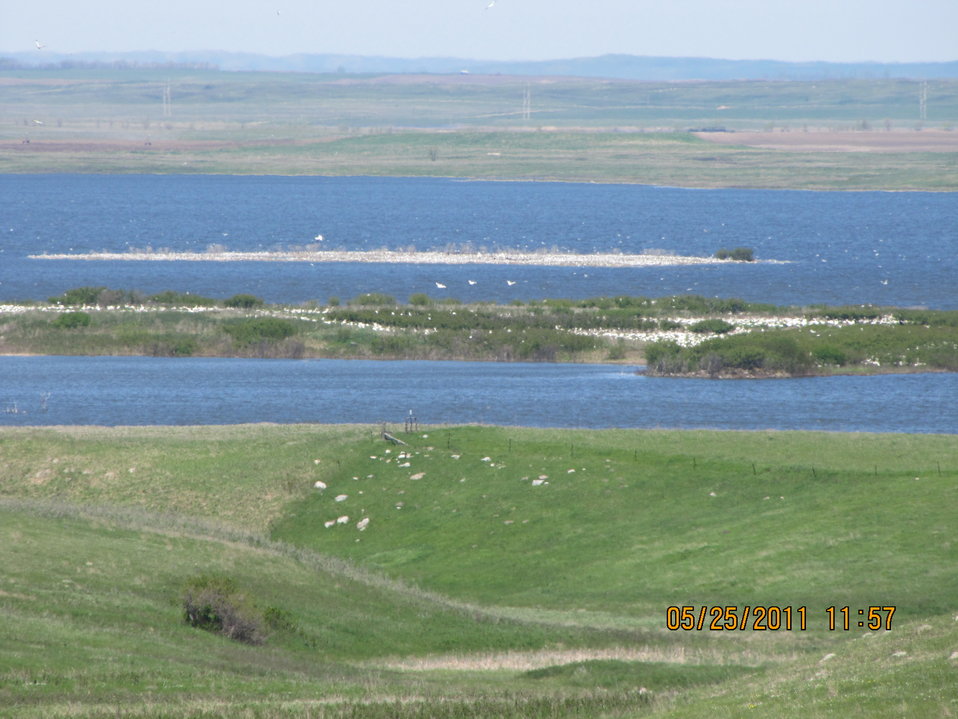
Nesting Islands

Two of the three nesting islands found in Chase Lake National Wildlife Refuge (NWR). View from the southeast. Chase Lake NWR is home not only to one of the largest nesting colonies of American White Pelicans but also to North Dakota's largest mixed-species waterbird colony.